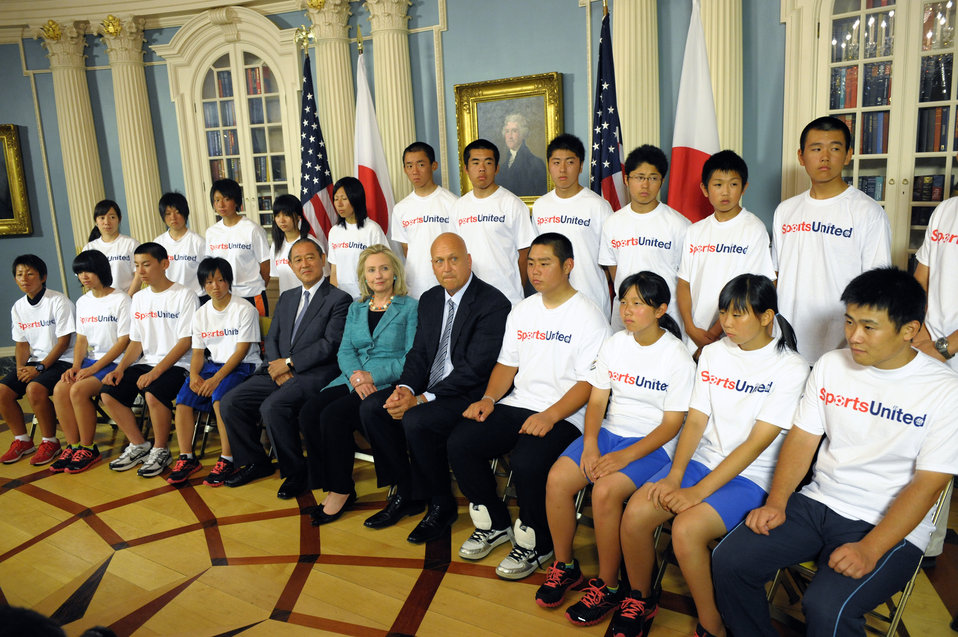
Secretary Clinton Meets With MLB Hall of Famer Cal Ripken, Jr., Japanese Youth Baseball and Softball Players, and Four Coaches

U.S. Secretary of State Hillary Rodham Clinton meets with Major League Baseball Hall of Famer Cal Ripken, Jr., 16 Japanese youth baseball and softball players, and four coaches participating in the U.S. Department of State’s first international sports exchange with Japan, at the U.S. Department of State in Washington, D.C., on August 9, 2011.